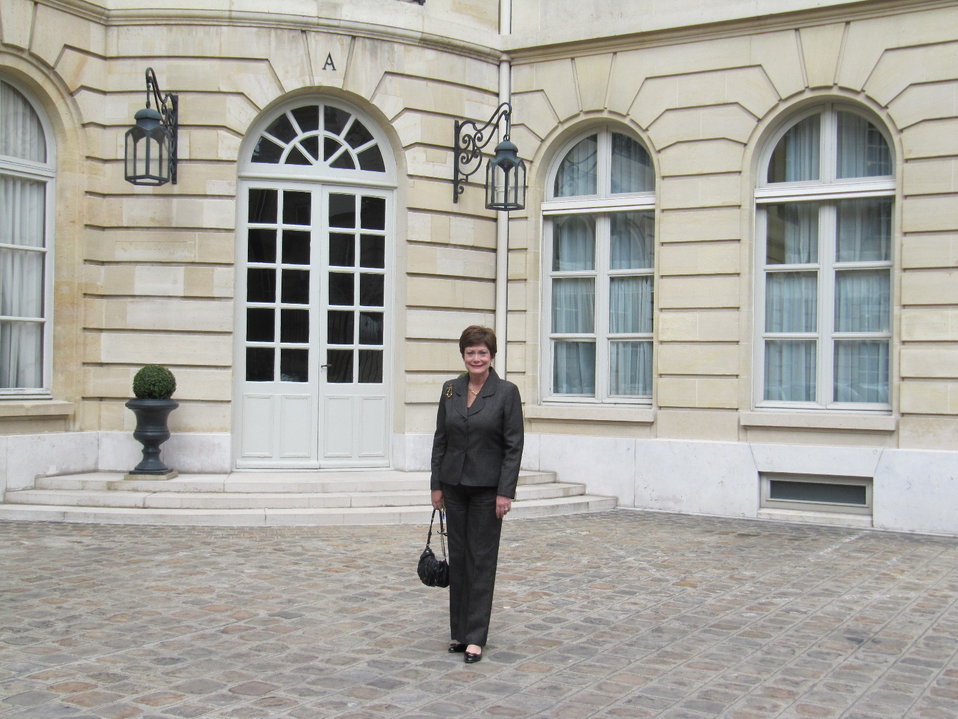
Under Secretary Tauscher at P-5 Conference in Paris, France

Under Secretary of State for Arms Control and International Security Affairs Ellen Tauscher in Paris, France at the P-5 Conference on Confidence Building Measures towards Nuclear Disarmament and Non-Proliferation on June 29, 2011.